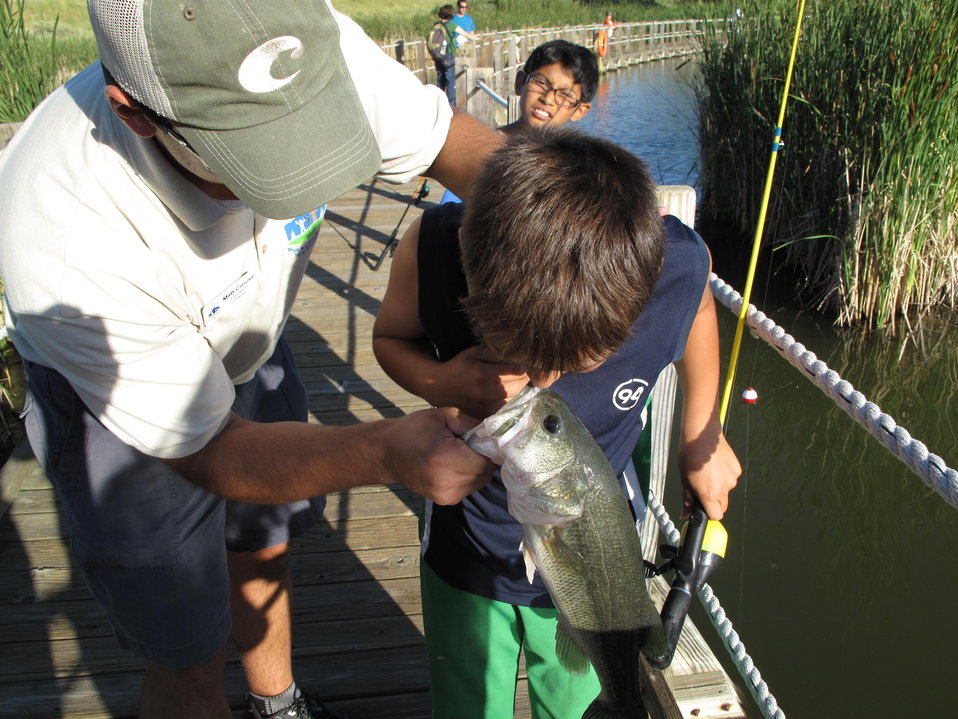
Caught a Fish

Give him a kiss!